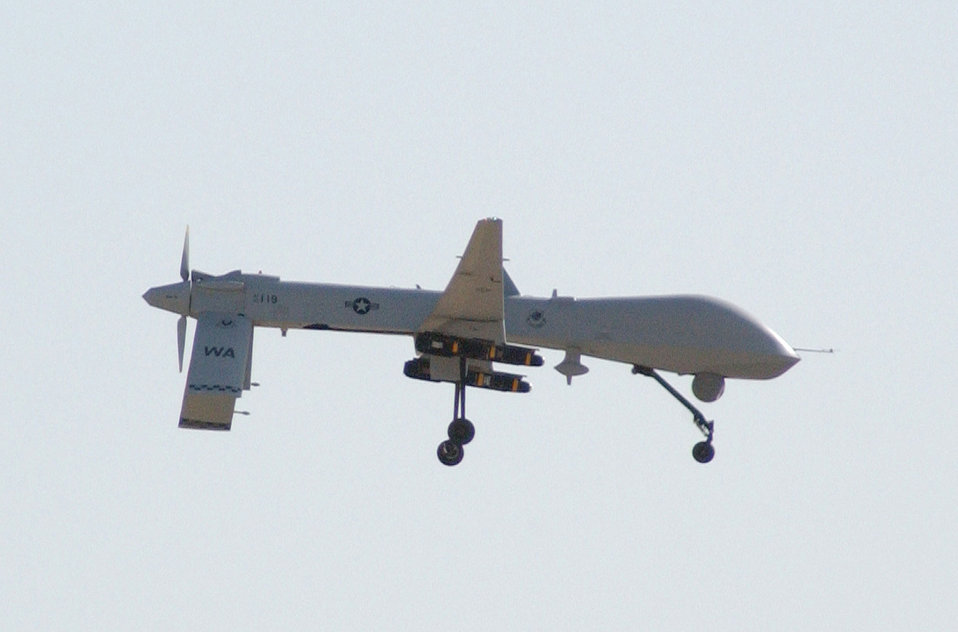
Aug. 18 airpower summary: Predators fly ISR missions

An MQ-1B Predator unmanned aerial vehicle prepares to land at Balad Air Base, Iraq, after a combat mission in support of Operation Iraqi Freedom. Predator aircraft fly intelligence, surveillance and reconnaissance missions in Iraq and Afghanistan. Air Force Predator missions contributed to the 28 ISR missions flown Aug. 18.